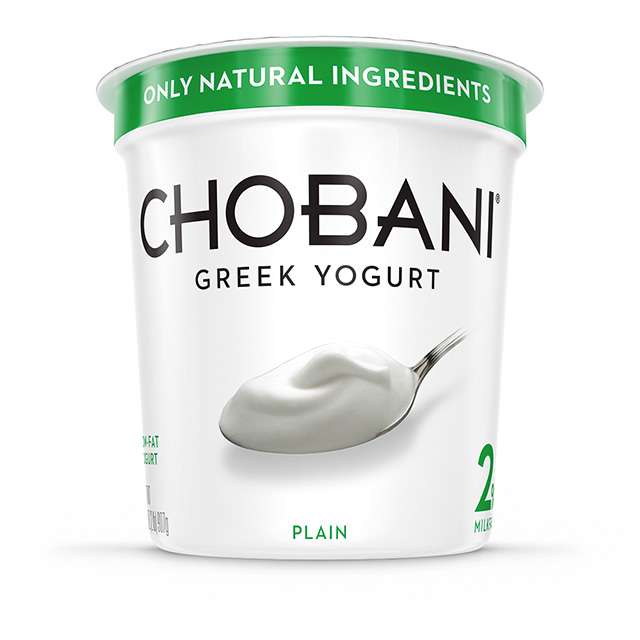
RECALLED – Greek yogurt products

September 6, 2013 – Product Recall – Chobani, Inc. Voluntarily Recalls Greek Yogurt Because of Product Concerns.